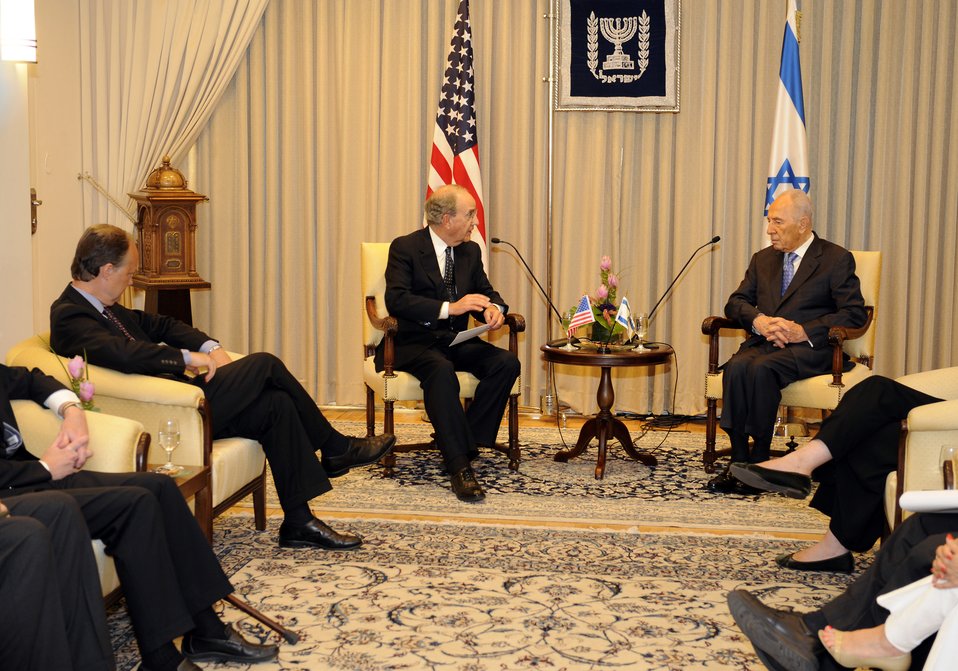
U.S. Special Envoy George Mitchell Meets With Israeli Defense Minister

U.S. Special Envoy George Mitchell with Israeli Minister of Defense Ehud Barak during their meeting in Tel Aviv, Israel July 26, 2009.